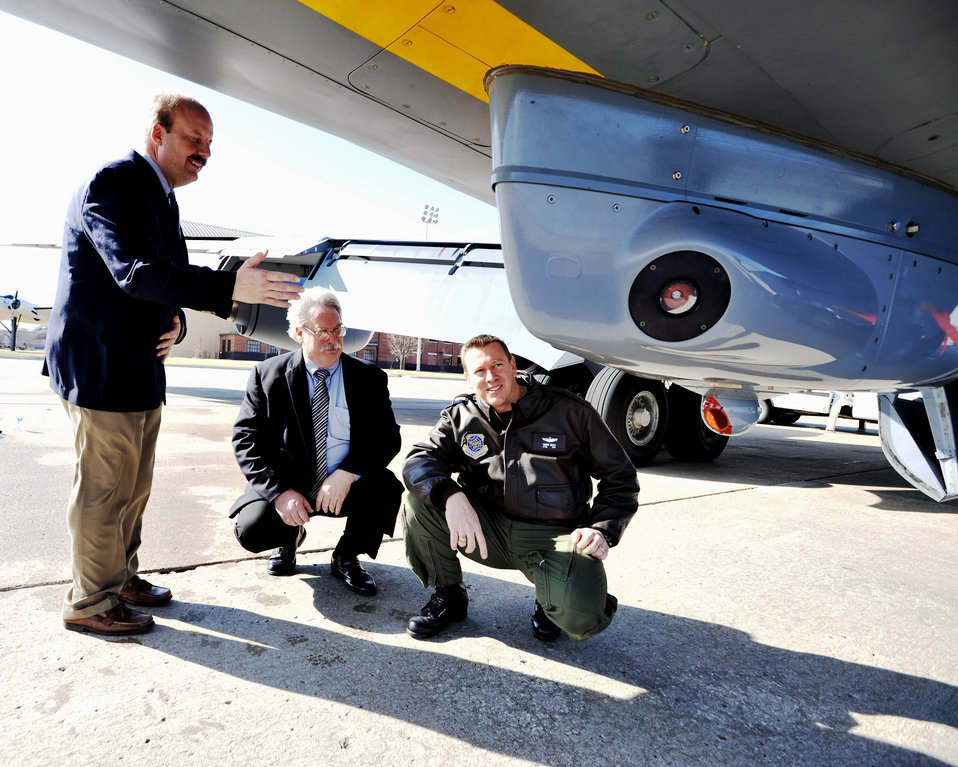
KC-135 LAIRCM

James Shilling, Raymond Berhalter and Lt. Col. Randall Sealy look at a Large Aircraft Infrared Countermeasures pod attached to a KC-135 Stratotanker on the flightline March 1, 2011, at Scott Air Force Base, Ill. The pod is a laser-based countermeasures system designed to detect and employ countermeasures against infrared-guided surface-to-air missiles. Mr. Shilling is the LAIRCM system manager for Northrop-Grumman in Chicago, Mr. Berhalter is the program manager at the KC-135 System Program Office at Tinker AFB, Okla., and Colonel Sealy is the tanker test manager and chief of the Air Mobility Command Aircraft Test Management Branch.